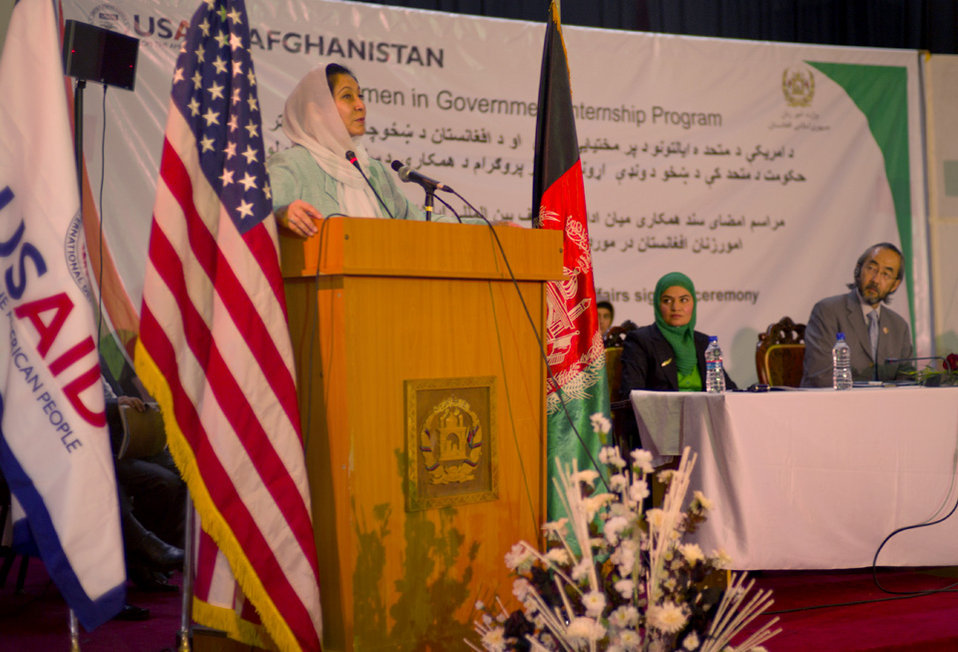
Minister of Women's Affairs